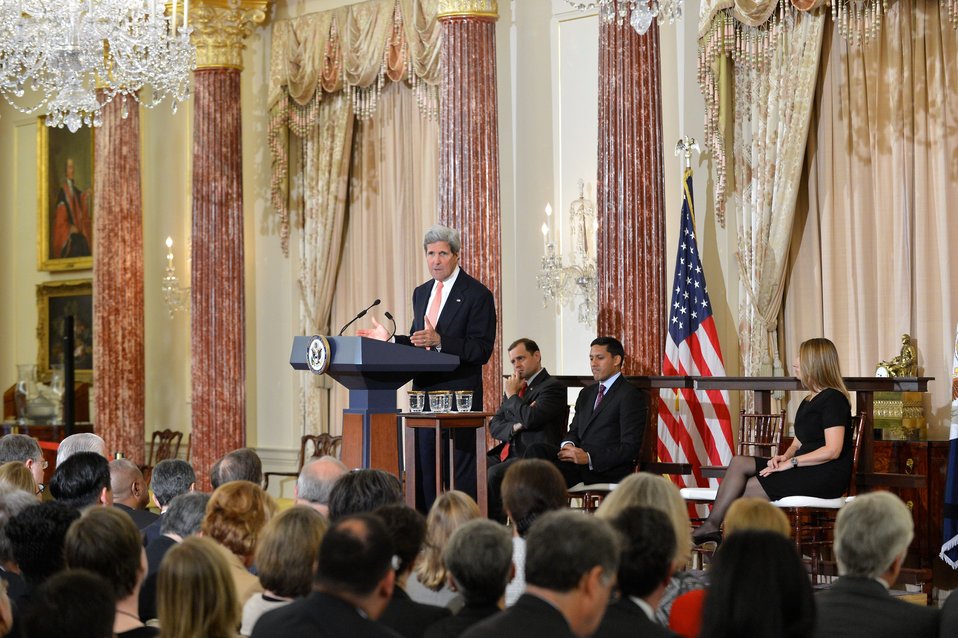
Secretary Kerry Delivers Remarks at the QDDR Launch

U.S. Secretary of State John Kerry delivers remarks at the public launch of the Department of State and U.S. Agency for International Development (USAID) review process for the second Quadrennial Diplomacy and Development Review (QDDR) at the U.S. Department of State in Washington, D.C., on April 22, 2014. The Secretary is joined by Deputy Secretary of State for Management and Resources Heather Higginbottom, USAID Administrator Rajiv Shah, and Special Representative for the QDDR Tom Perriello.